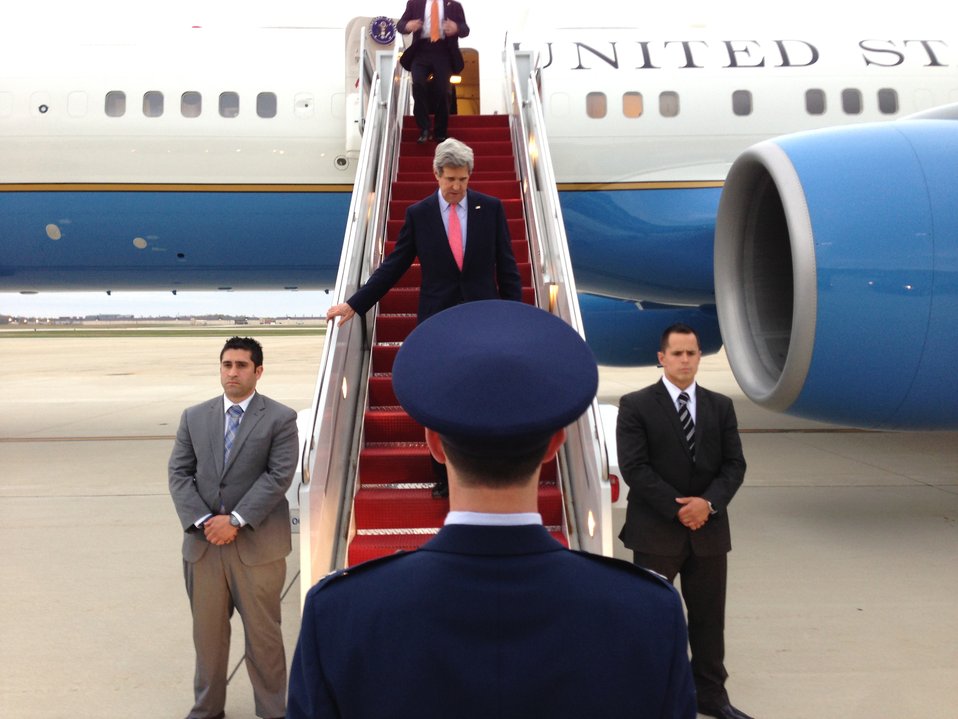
Secretary Kerry Arrives at Andrews Air Force Base

U.S. Secretary of State John Kerry arrives at Andrews Air Force Base after his 10-day trip to Istanbul, Jerusalem, Ramallah, London, Tokyo, Seoul, and Beijing on April 15, 2013.